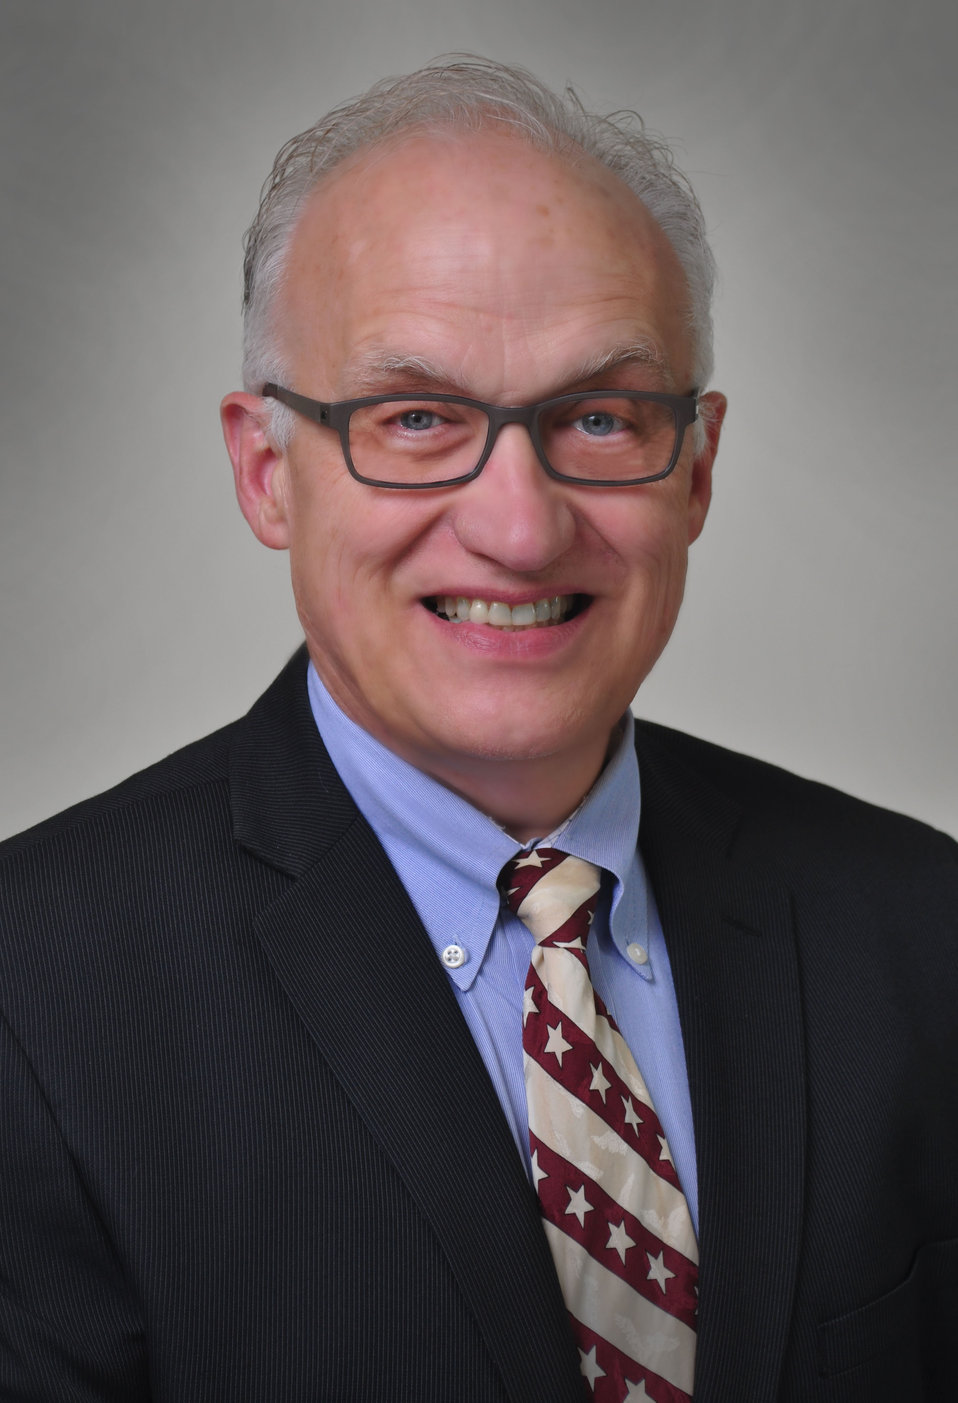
David R. Allen Assistant Manager for Safety and Technical Services Department of Energy Oak Ridge Office

13-086 DOE photo Lynn Freeny 7-24-2013 Assistant Manager for Safety and Technical Services Department of Energy Oak Ridge Office Oak Ridge Tennessee